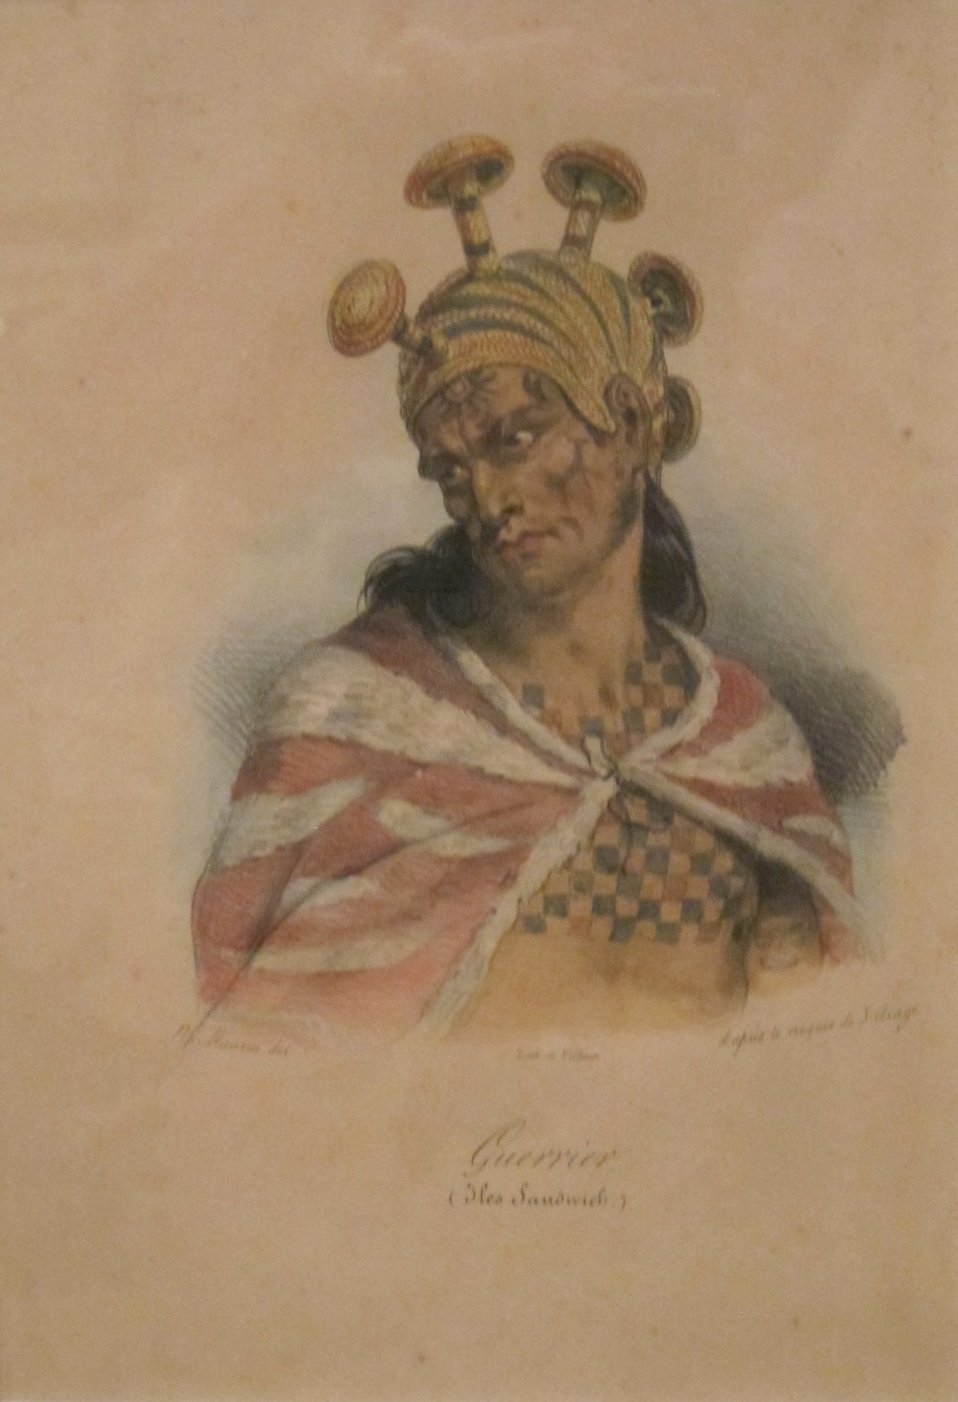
'Warrior, Sandwich Islands', lithograph after Jacques Arago, Honolulu Museum of Art